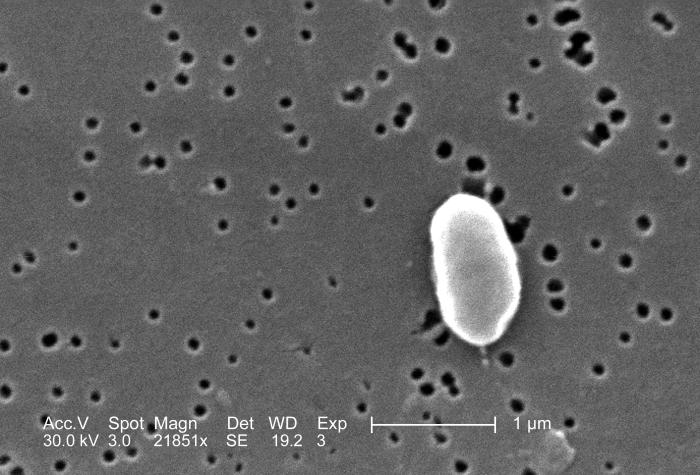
This scanning electron micrograph (SEM) depicts a Vibrio parahaemolyticus bacterium; Mag. 21851x.